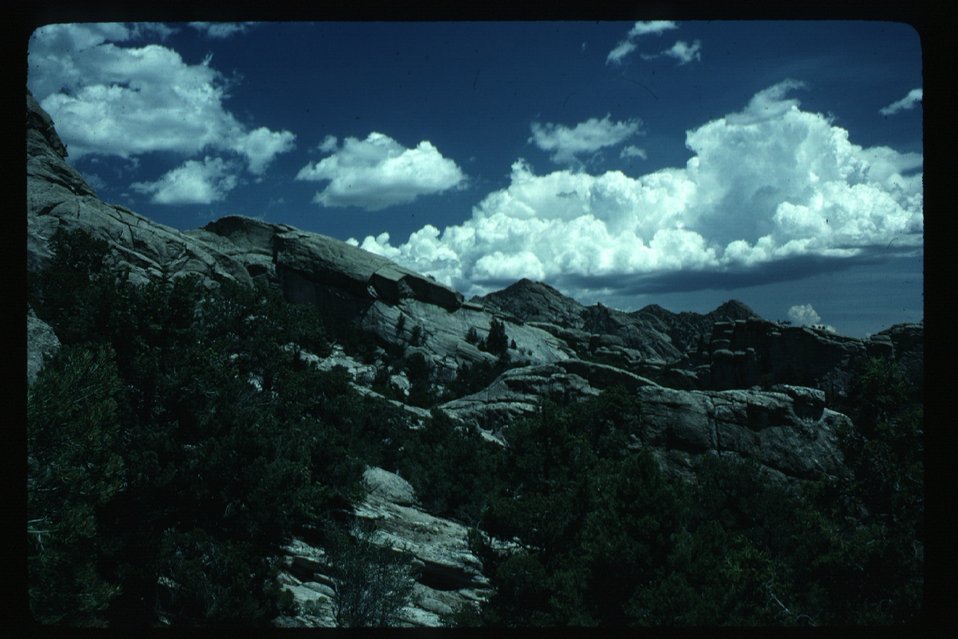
Rock formations Burley City of Rocks Burley Field Office USRD Upper Snake River District